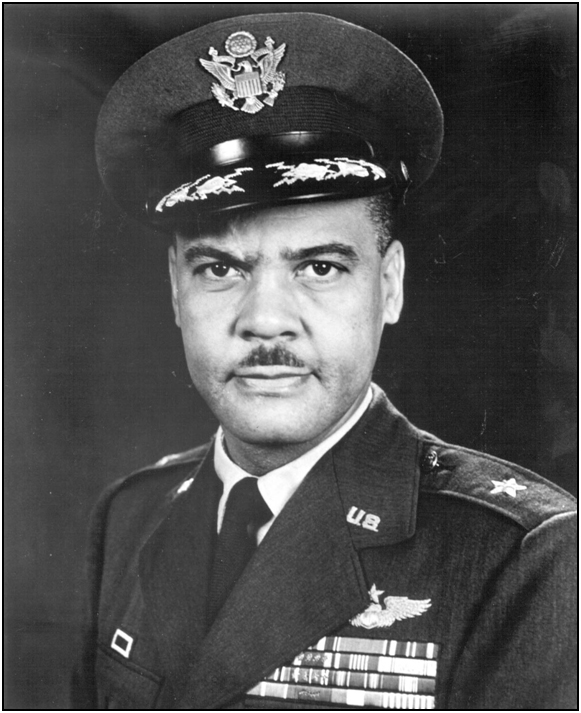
Benjamin O. Davis Jr. became the first African-American general in the Air Force.